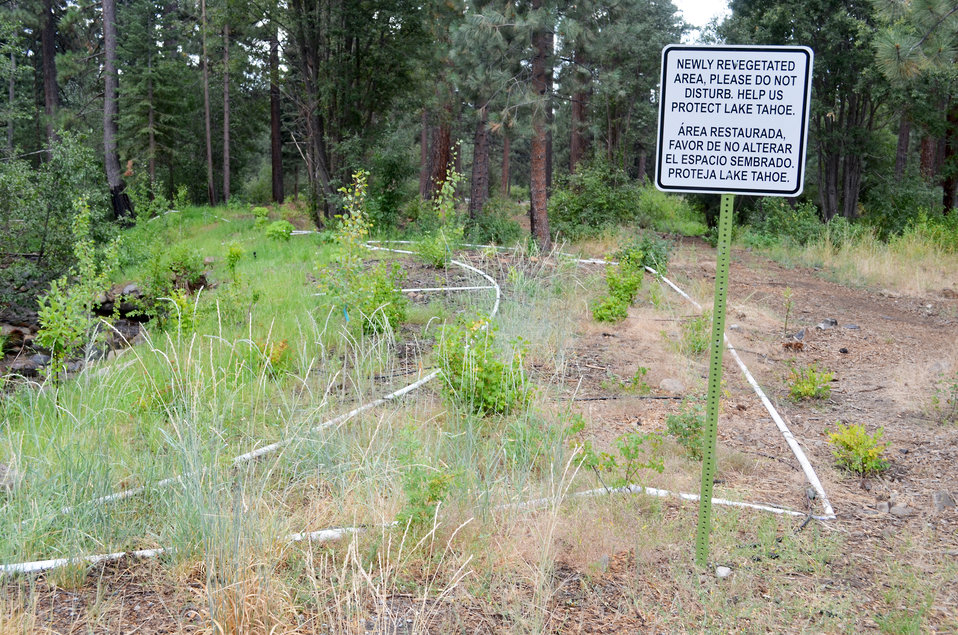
New vegetation planting

130819-A-QE256-057 – A sign tells visitors about vegetation efforts by the U.S. Army Corps of Engineers Sacramento District and the Incline Village General Improvement District along Third Creek near Incline Village, Nev., shown Aug. 19, 2013. Newly-planted vegetation along the creek bank helps control erosion, a major source of sediment discharge into Lake Tahoe.